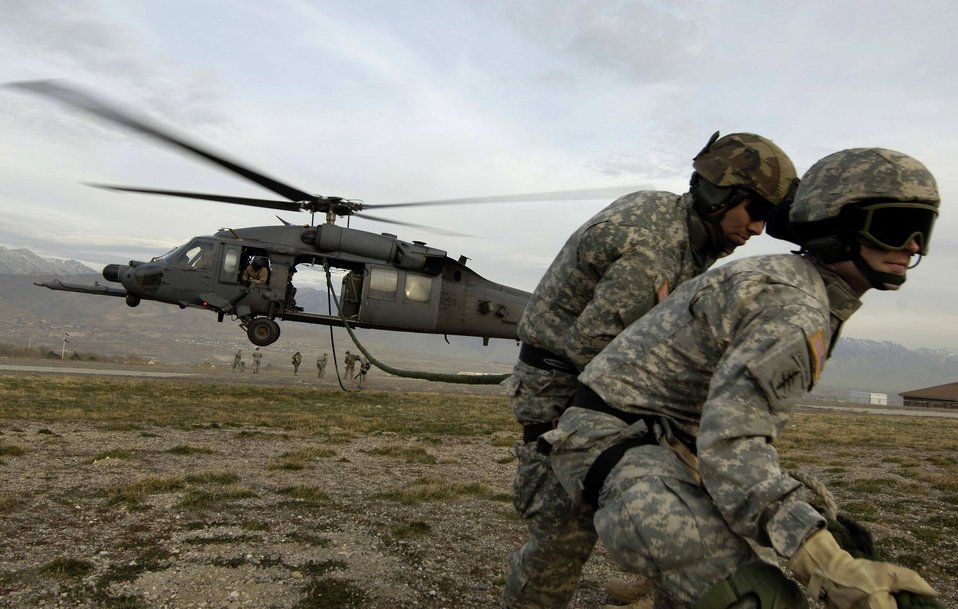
Into the landing zone

Soldiers from the Utah National Guard retrieve a fast rope after being dropped into a landing zone Nov. 9 by an HH-60 Pave Hawk during a combat search and rescue exercise Nov. 9 at Camp Williams, Utah. Airmen from the 34th Weapons Squadron at Nellis Air Force Base, Nev., led the training.